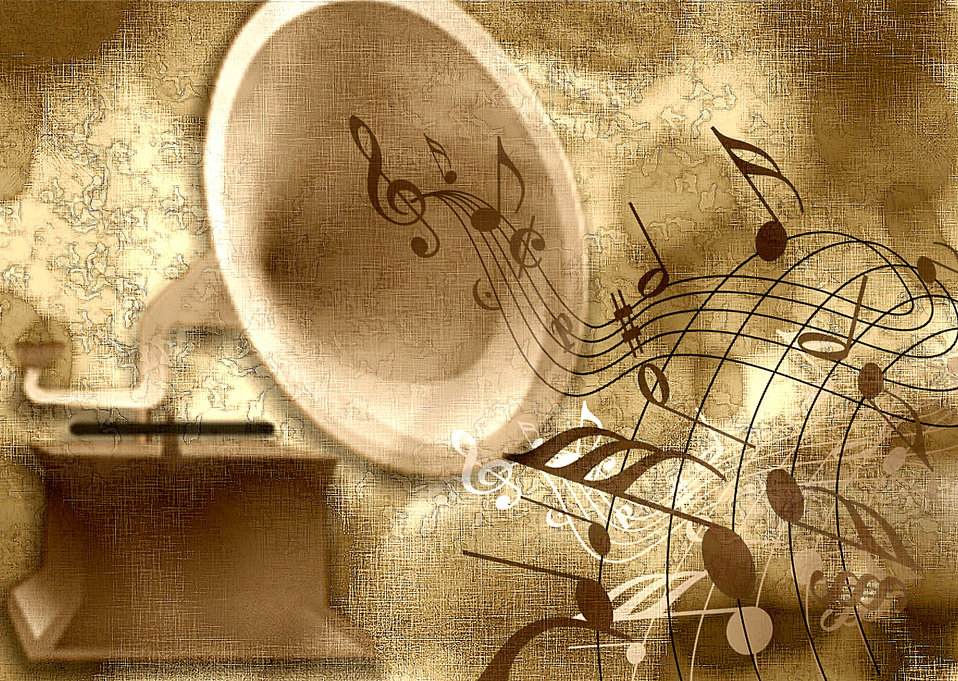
Oldies music picture

Old music image.